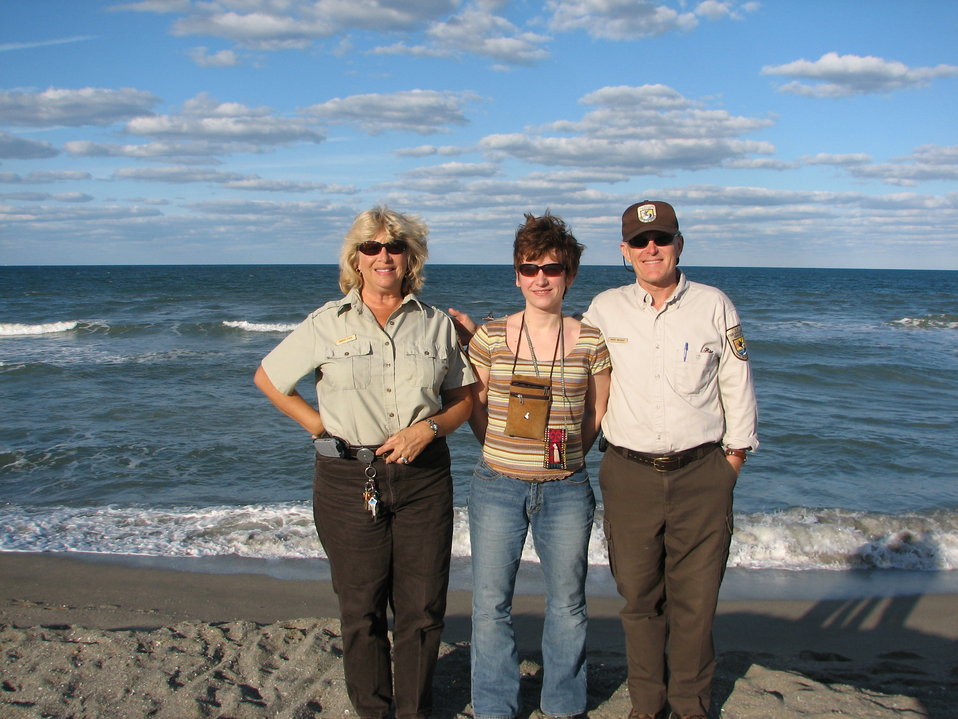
Hobe Sound NWR

Scientific exchange at Hobe Sound National Wildlife Refuge.